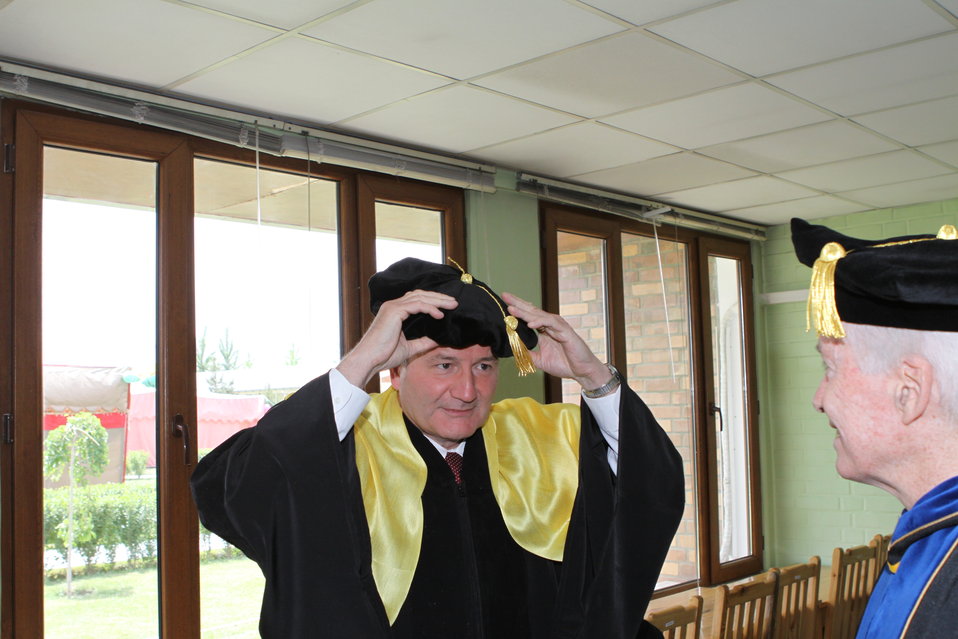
100526 AUAF Graduation 052